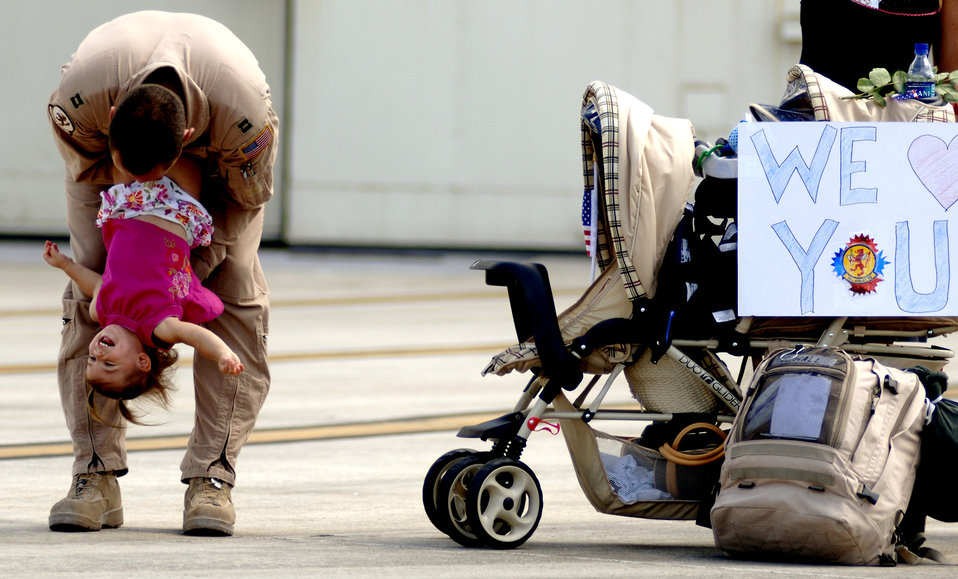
Nothing can be finer than to be in Carolina

Capt. Zach Hall is reunited with his daughter, Sophia, Sept. 3 at Charleston Air Force Base, S.C. More than 117 Airmen from the 16th Airlift Squadron returned to Charleston AFB after being deployed for more than four months to Southwest Asia. Captain Hall is a 16th AS C-17 Globemaster III pilot.